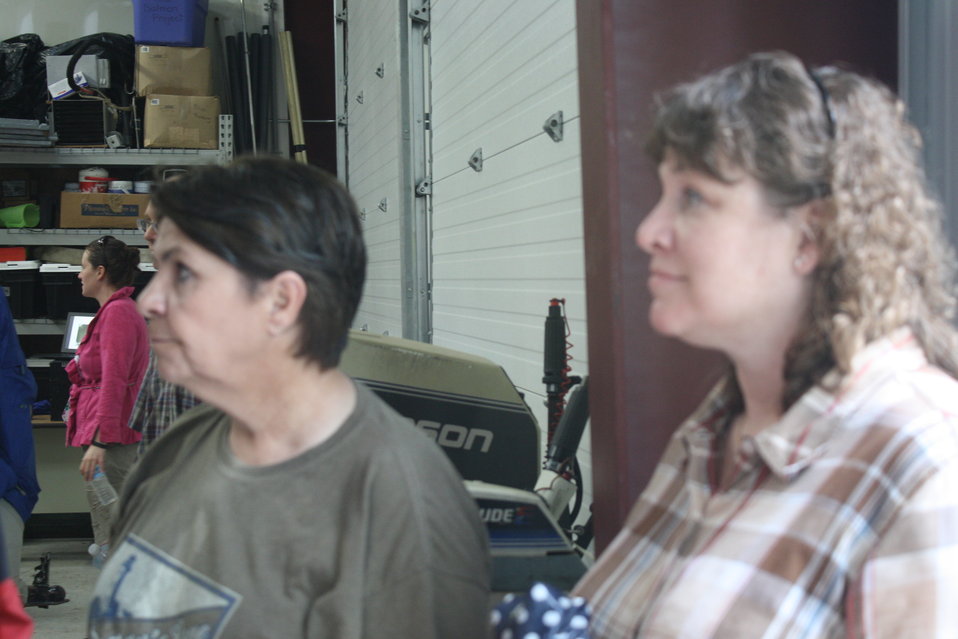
Nashua National Fish Hatchery welcomes regional office employees

Viewing the Hatchery.